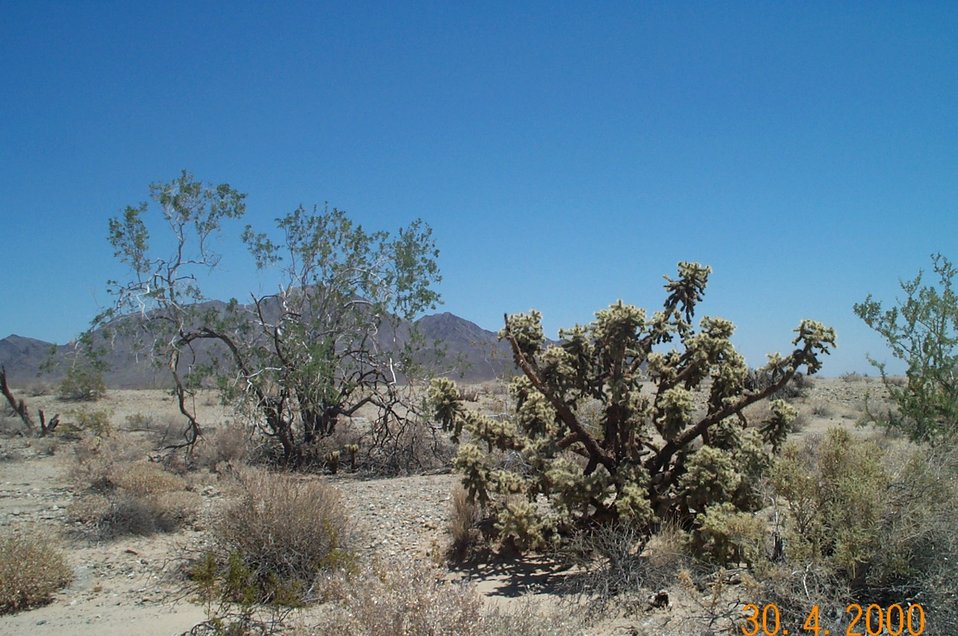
Nine to ten foot tall Munz cholla